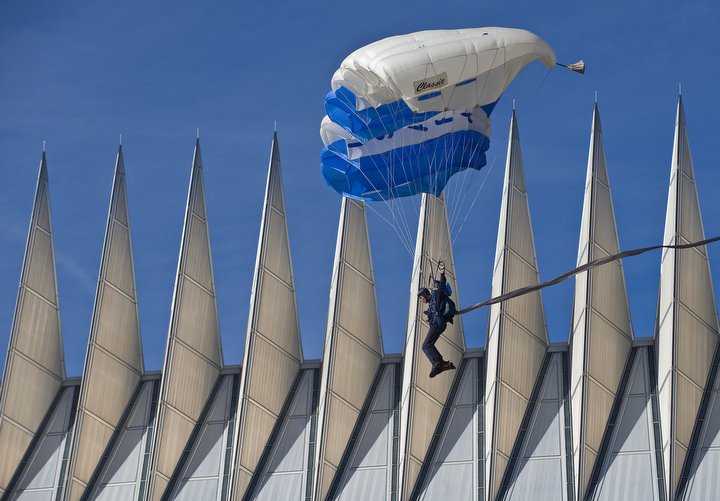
ESPN films 'College GameDay' from Academy

A member of the U.S. Air Force Academy's Wings of Blue Parachute team maneuvers past the spires of the Cadet Chapel toward a successful landing Nov. 7 at the Terrazzo during ESPN's